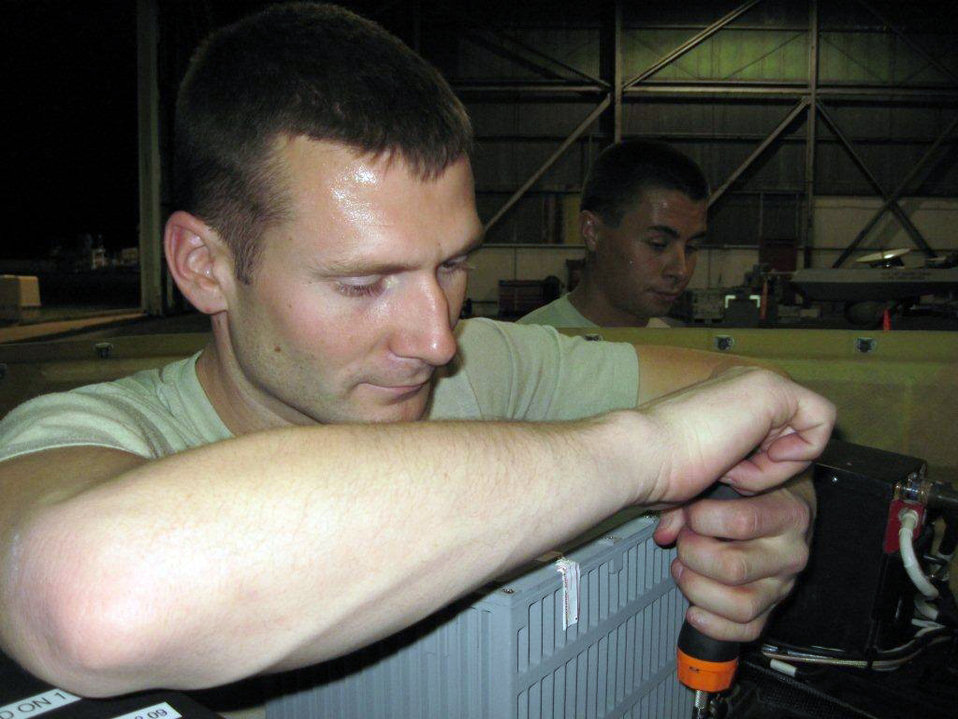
Staff Sgt. Jake Gauvin installs a multisensor tactical system turret on an RQ-1 Predator in support of Operation Unified Response Feb. 9, 2010, at Holloman Air Force Base, N.M. Members from the 849th Aircraft Maintenance Squadron teamed up with members of the 432nd Air Expeditionary Wing from Creech AFB, Nev., to provide support to troops on the ground in Haiti. Sergeant Gauvin is a member of the 849th AMXS at Holloman Air Force Base, N.M.